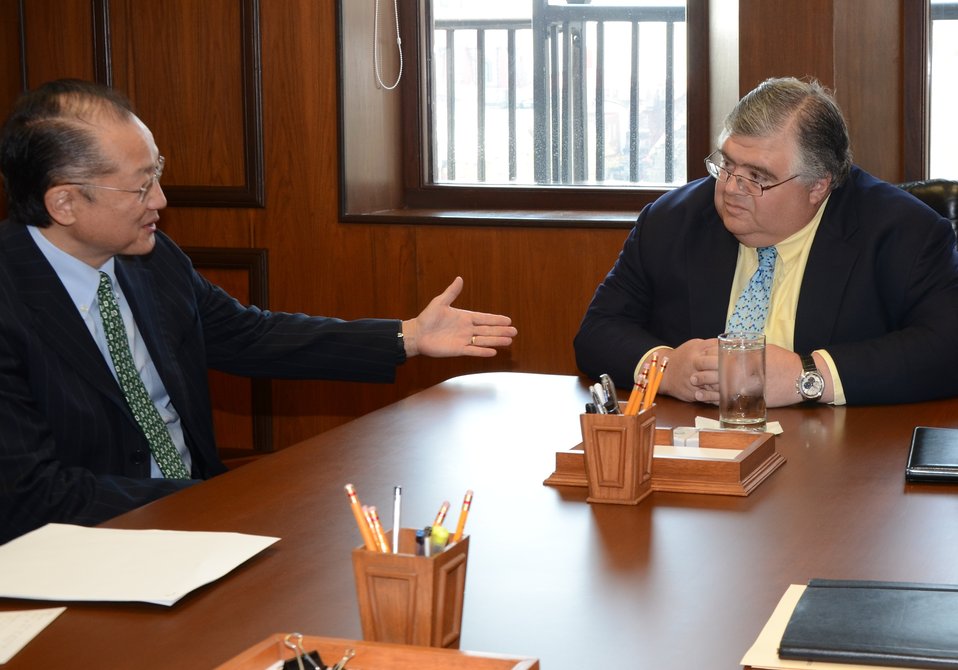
Dr. Jim Yong Kim Meeting with Mexican Central Bank Governor Agustin Carstens

Dr. Jim Yong Kim, President Obama's nominee for the World Bank Presidency, traveled to Mexico City, Mexico today on the eighth country stop of his global listening tour. While there, Dr. Kim met with Mexican Central Bank Governor Agustin Carstens. They discussed the relationship between the World Bank and the International Monetary Fund (IMF) and the role of the World Bank in strengthening the global financial architecture.